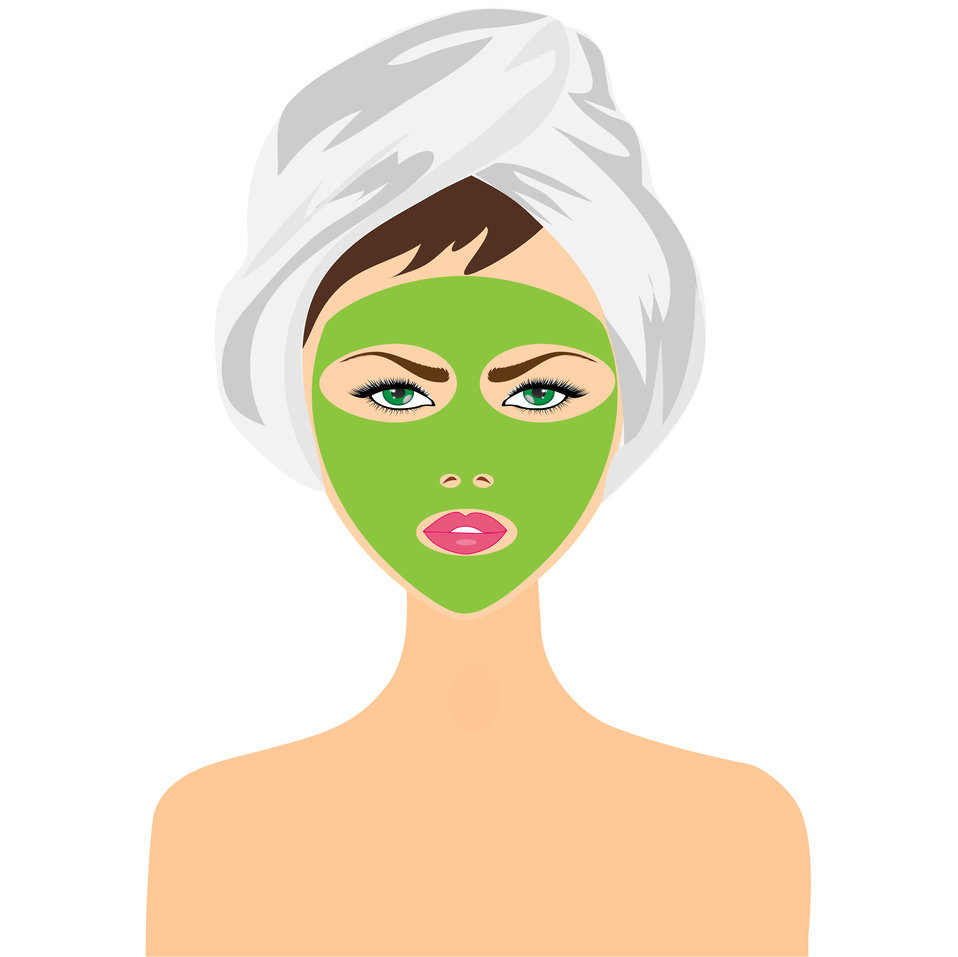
Beauty treatment girl

Woman with green face mask illustration.